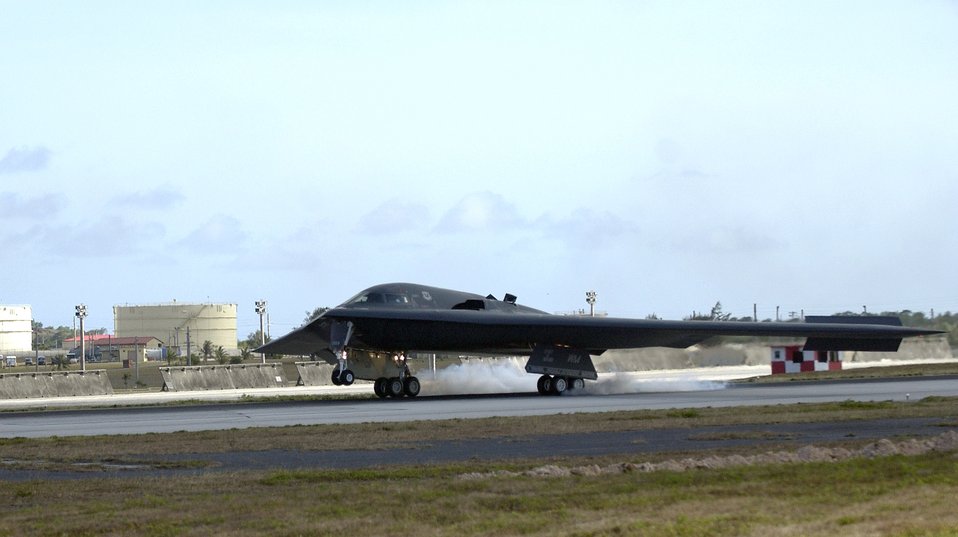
B-2s arrive at Andersen

A B-2 Spirit lands at Andersen Air Force Base, Guam, on Sunday, April 30, 2006. B-2s are replacing the B-1B Lancers at Andersen as part of the continuous bomber rotation.